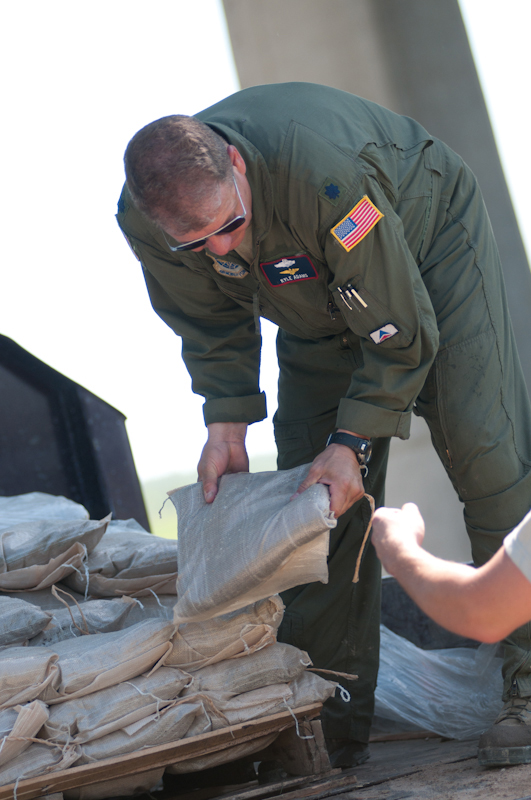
Air Guardsmen fight flood

Airmen from the Missouri Air National Guard's 139th Airlift Wing in St. Joseph, Mo., unload sandbags June 30, 2011, in an effort to help fight rising flood waters near Elwood, Kan.